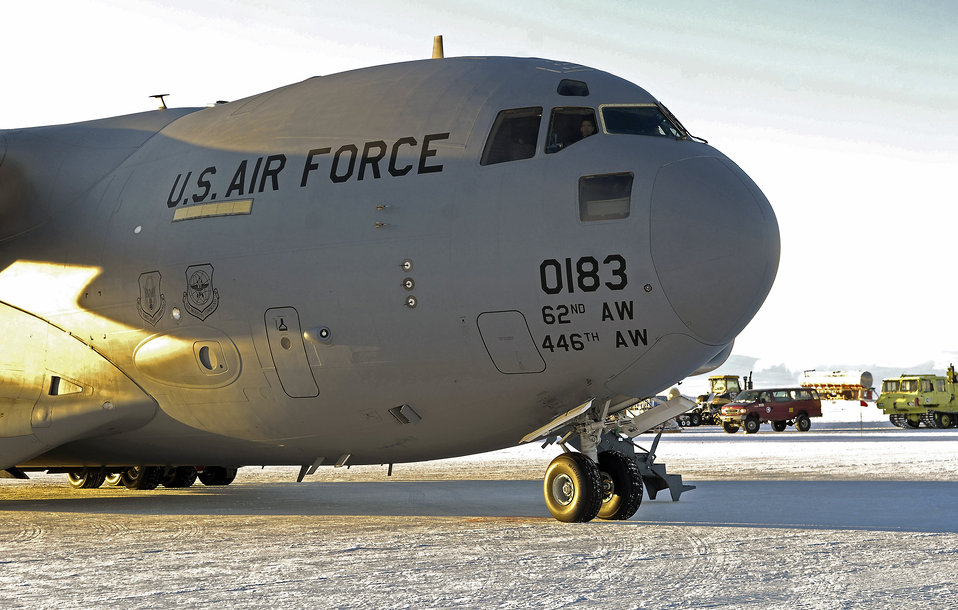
Cool delivery

A C-17 Globemaster III sits on the Pegasus Ice Runway near McMurdo Station, Antarctica Sept. 10. A crew of active duty and Reserve Airmen from McChord Air Force Base, Wash., delivered hundreds of thousands of pounds of supplies and equipment to National Science Foundation outposts in Antarctica over the past 10 days. The aircrew is part of Joint Task Force Support Forces Antarctica, headquartered at Hickam AFB, Hawaii, and led by 13th Air Force. The joint task force is currently conducting Operation Deep Freeze in support of the National Science Foundation and U.S. Antarctic Program.